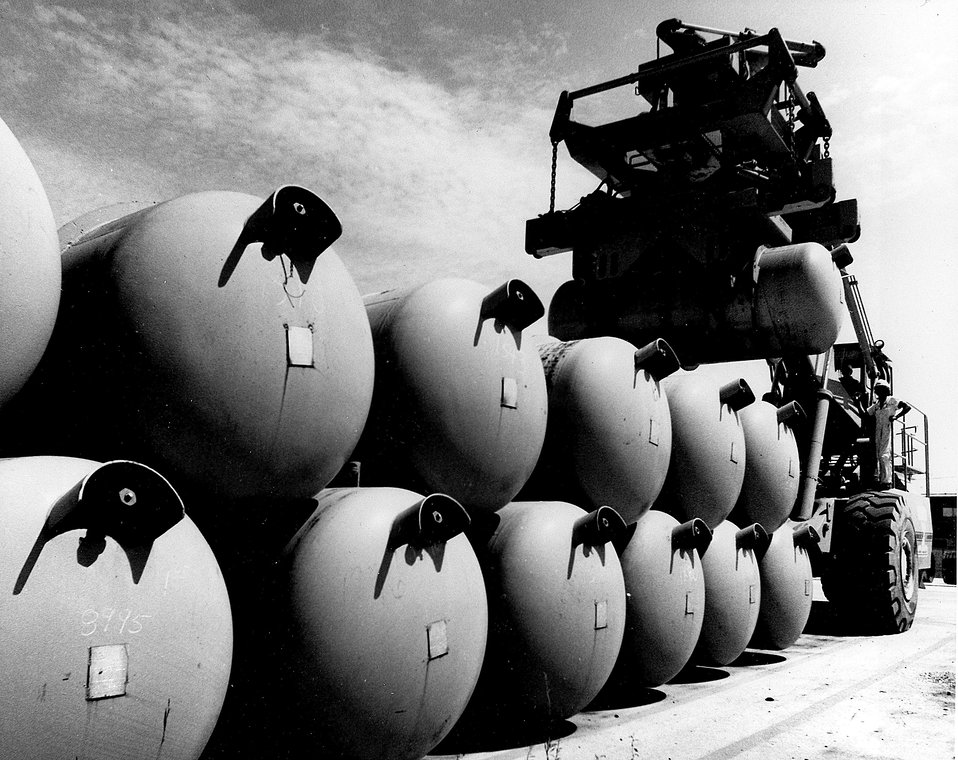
OAK RIDGE, TENNESSEE...Uranium enrichment through gaseous diffusion. The large tanks weigh 10 tons and contain feed material, uranium hexaflouride, for the enrichment process carried out in the ERDA's gaseous diffusion plants at Oak Ridge, Tennessee; Puducah, Kentucky and Portsmouth, Ohio. Circa 1977.